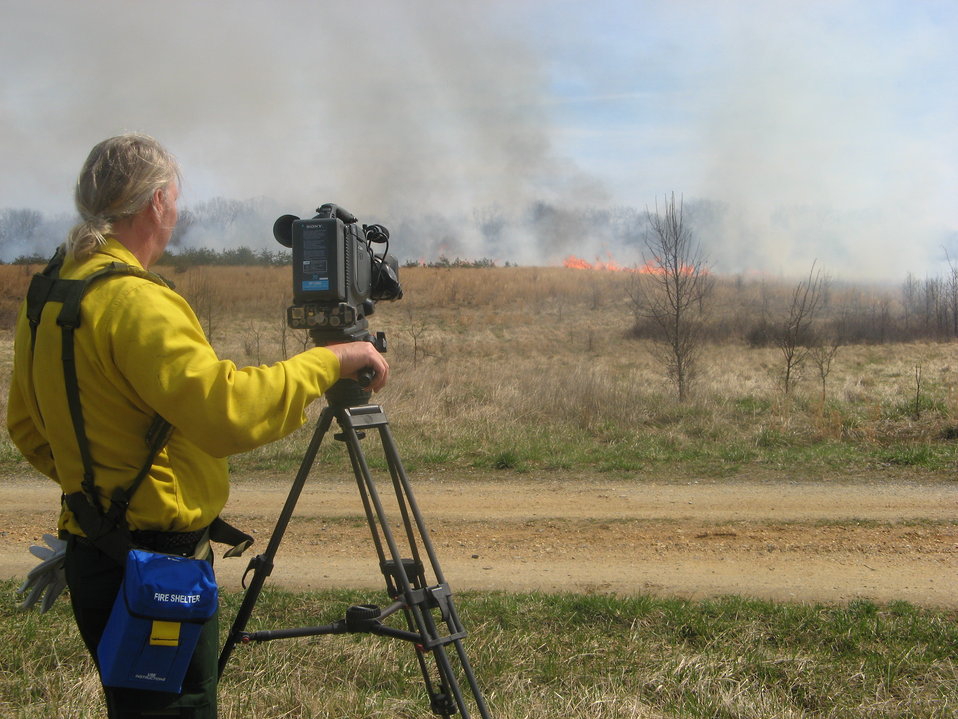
Filming controlled burn at Patuxent National Research Refuge

Laurel, MD: A videographer films a controlled burn in progress at Patuxent National Research Refuge.